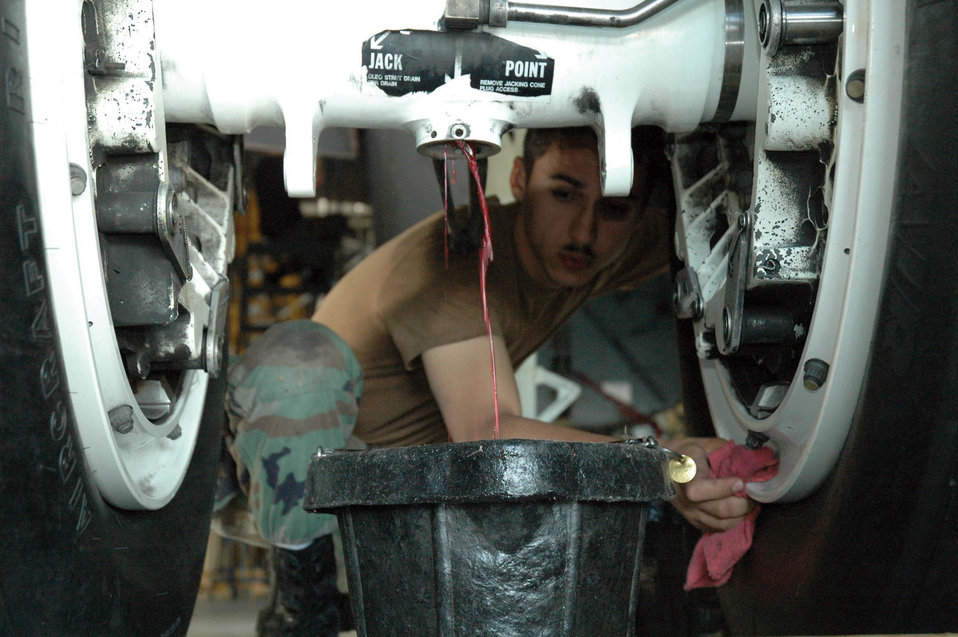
Drained

MINOT AIR FORCE BASE, N.D. --- Airman 1st Class Armando Williams drains a strut on a B-52H Stratofortress during a phase inspection. Airman Williams is with the 5th Aircraft Maintenance Squadron